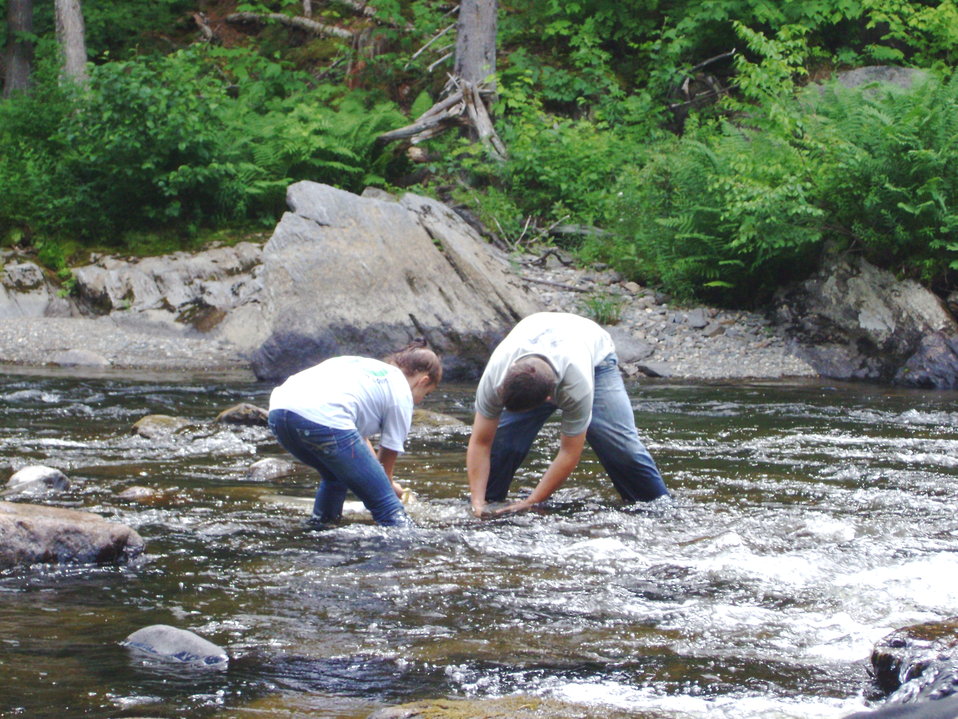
Looking for salamanders

YCC crew members look for salamanders at Umbagog National Wildlife Refuge.